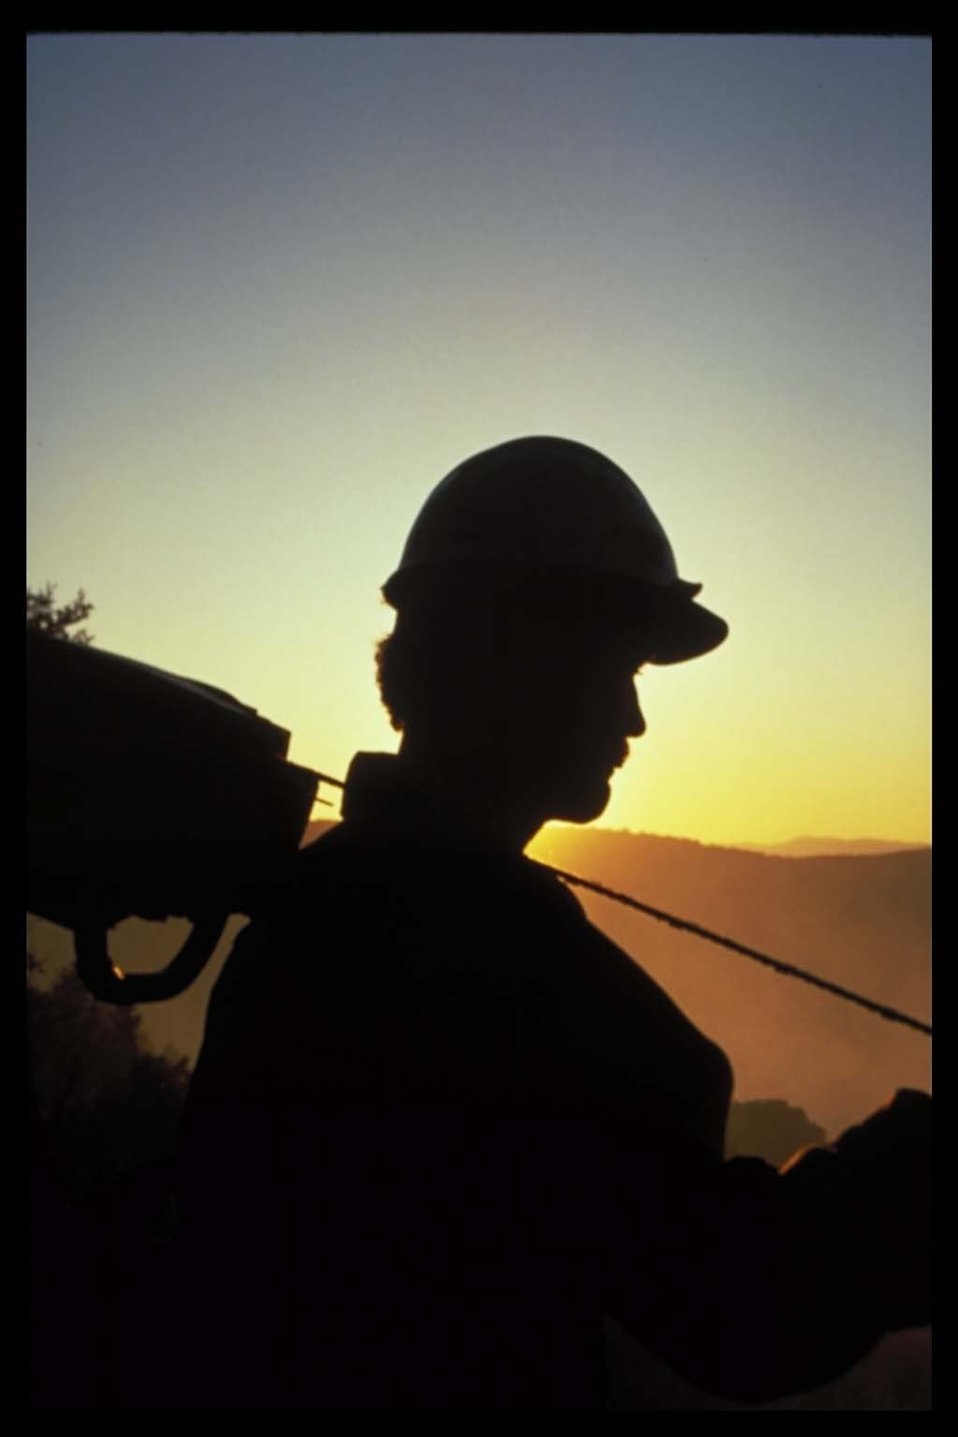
Wildland firefighter